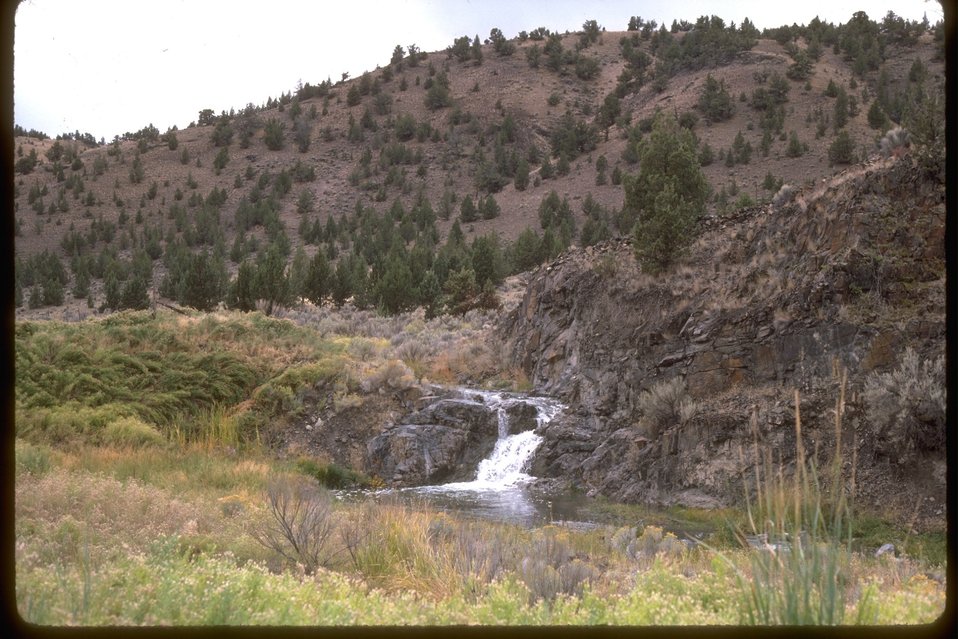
Niche Point in Bear Creek.